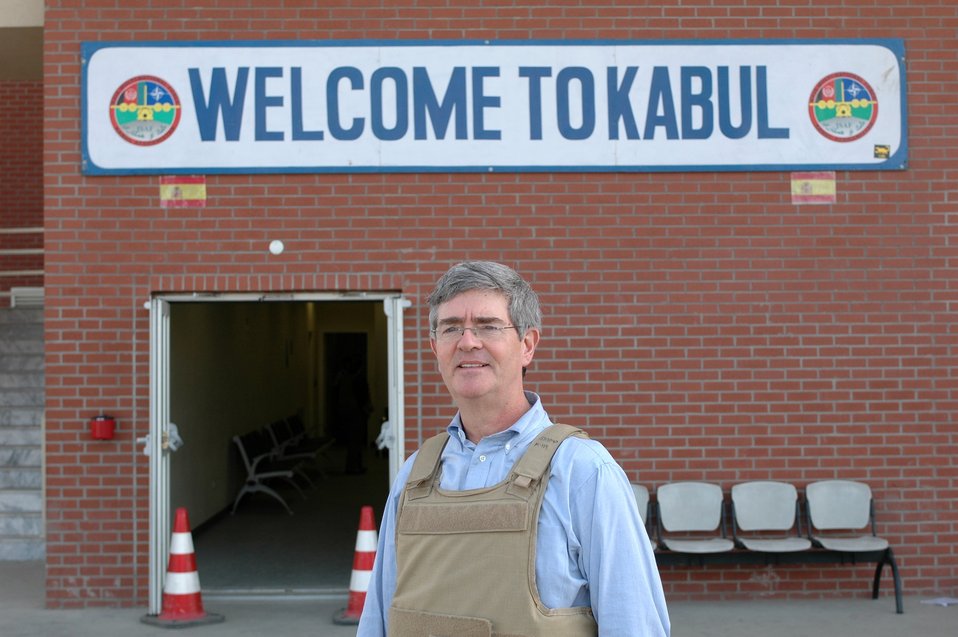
CODEL Berman